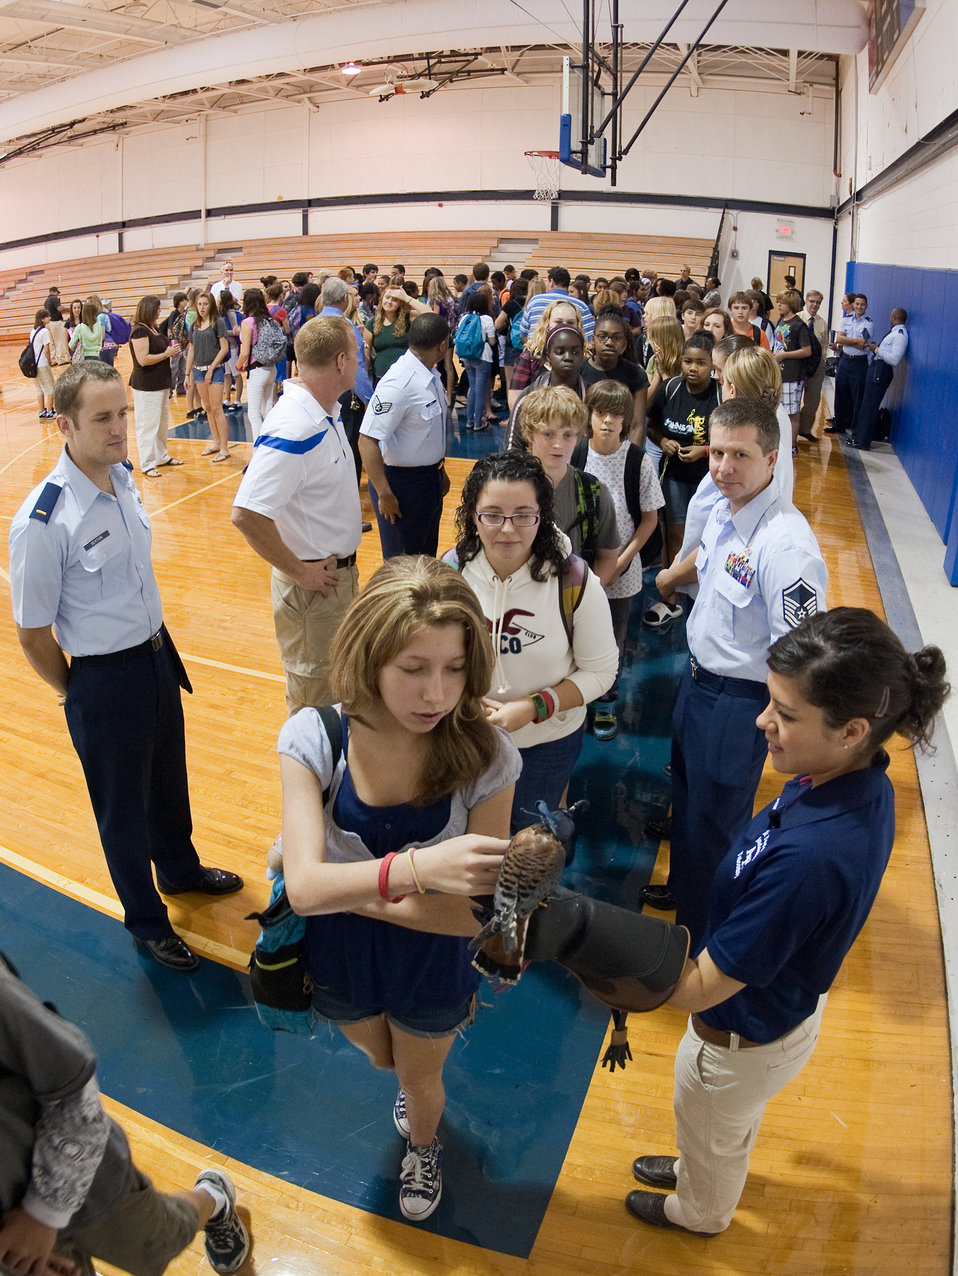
Small kestral captures school's attention

Students were able to individually meet Cadet 3rd Class Danielle Cortez and